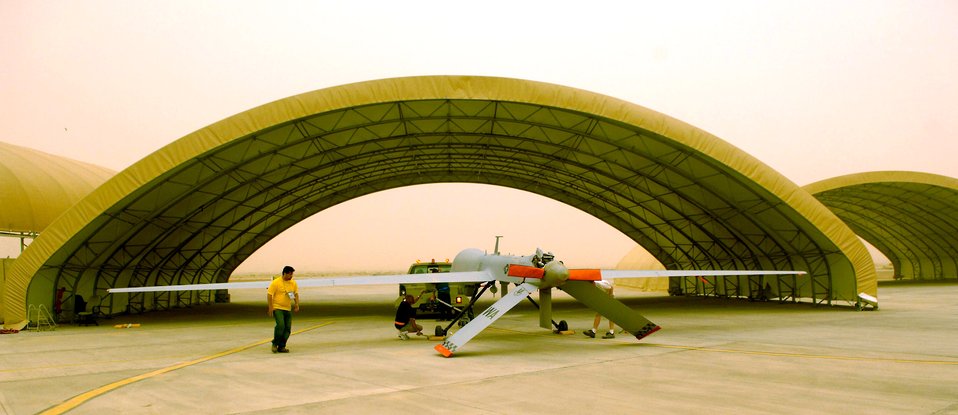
Predators wait to soar into Iraqi sky

An MQ-1 Predator unmanned aerial vehicle hooks up to be taxied for maintenance after a May 17 mission at Balad Air Base, Iraq. The Predator provides armed reconnaissance, airborne surveillance and target acquisition for coalition forces. The Predator's primary mission is interdiction and conducting armed reconnaissance against critical and perishable targets.